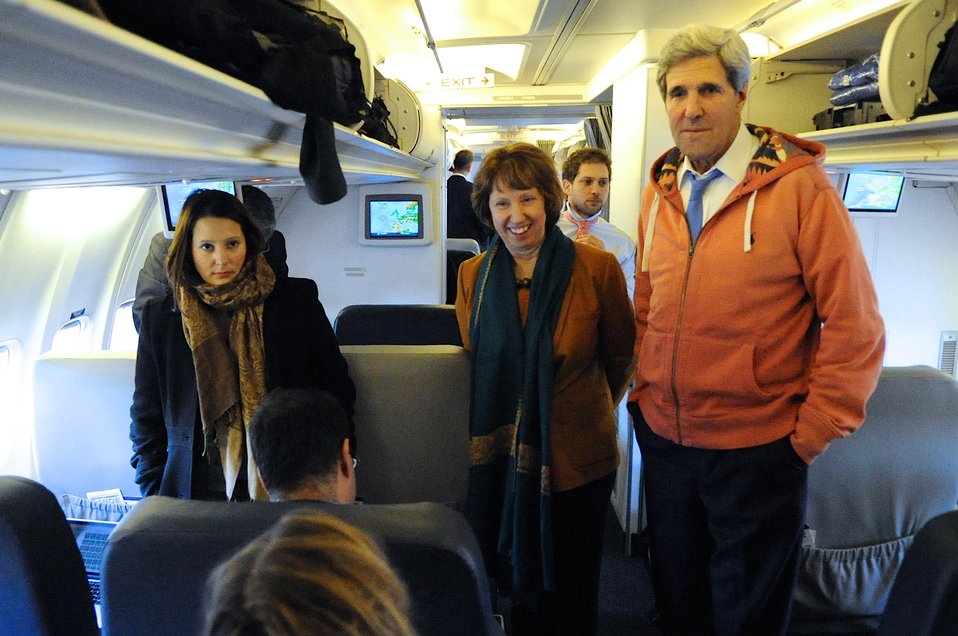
Secretary Kerry and EU High Representative Ashton Address Reporters

U.S. Secretary of State John Kerry and European Union High Representative Catherine Ashton address reporters as the two travel from Geneva, Switzerland, to London, United Kingdom, after all-night P5 1 meetings about Iran's nuclear capabilities, November 24, 2013.